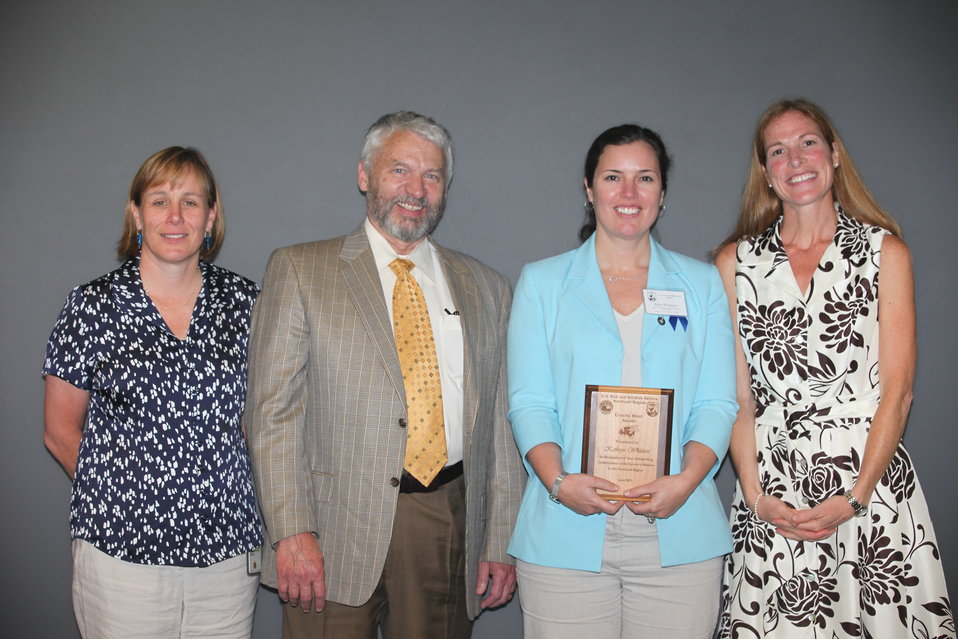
Kathryn Whitacre of the Regional Office- Budget and Administration was awarded the Region 5 Unsung Hero Award.
From left to right: Deputy Regional Director Deb Rocque, Deputy Director Rowan Gould, Kathryn Whitacre and Regional Director Wendi Weber